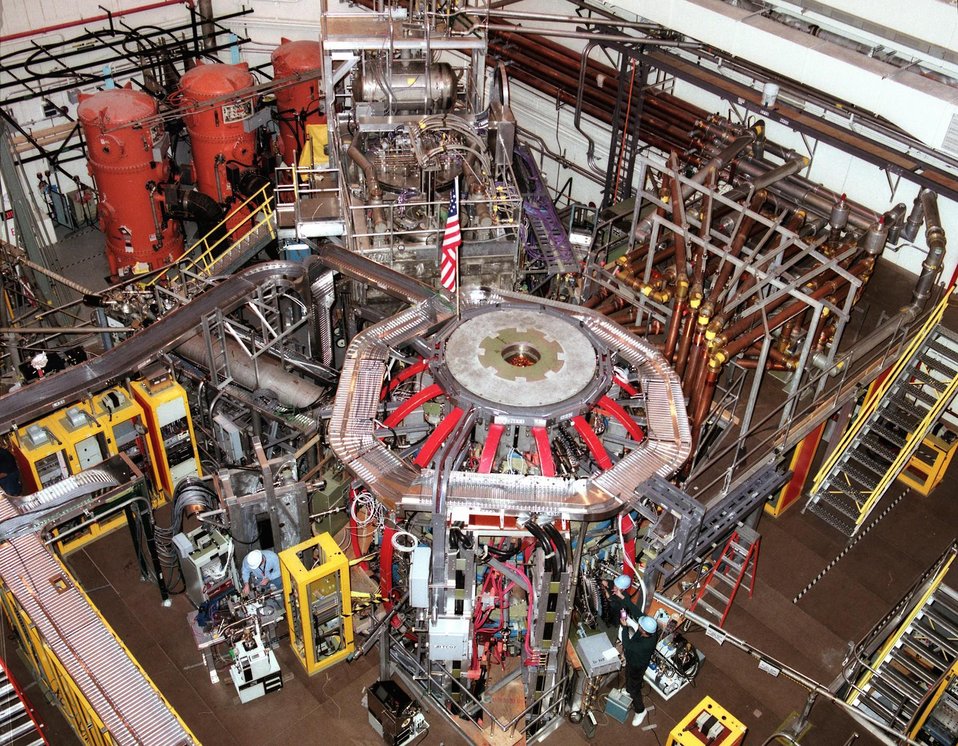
THE NATIONAL SPHERICAL TORUS EXPERIMENT AT THE PRINCETON PLASMA PHYSICS LABORATORY.

THE NATIONAL SPHERICAL TORUS EXPERIMENT IS AN INNOVATIVE MAGNETIC FUSION DEVICE THAT WAS CONSTRUCTED BY THE PRINCETON PLASMA PHYSICS LAB IN COLLABORATION WITH THE OAK RIDGE NATIONAL LAB, COLUMBIA UNIVERSITY AND THE UNIVERSITY OF WASHINGTON AT SEATTLE. NSTX WILL BE USED TO STUDY THE PHYSICS PRINCIPLES OF SPHERICALLY SHAPED PLASMAS-HOT IONIZED GASES WHICH NUCLEAR FUSION WILL OCCUR UNDER THE APPROPRIATE CONDITIONS OF TEMPERATURE, DENSITY, AND CONFINEMENT IN A MAGNETIC FIELD.